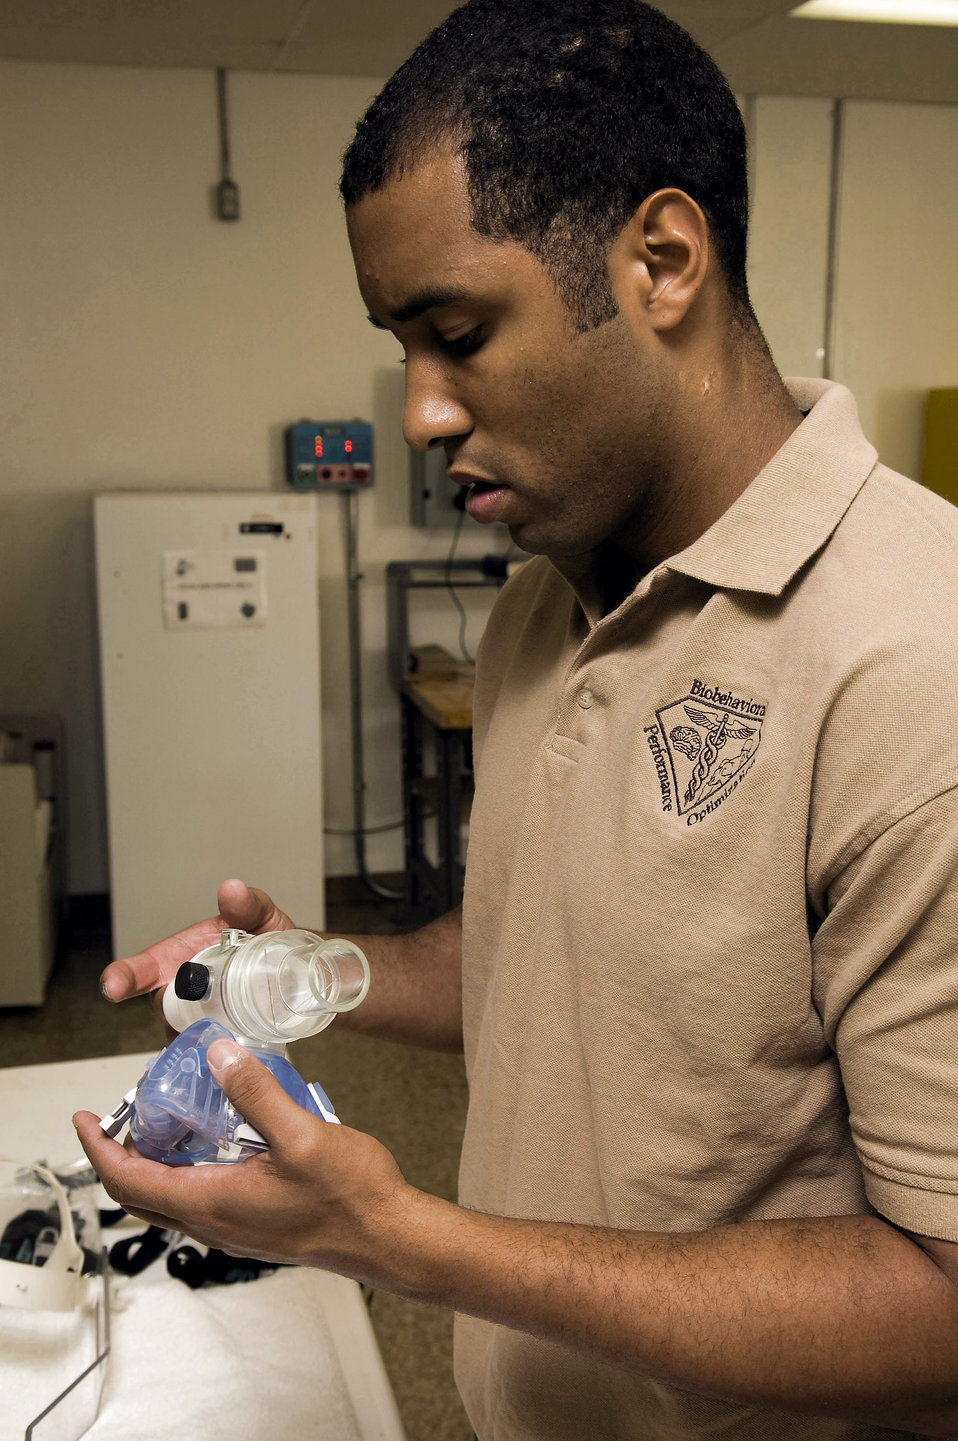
Studying human performance

Staff Sgt. Andre Scott assembles a breathing mask used to collect expired gases for comparison to atmospheric gases prior to the arrival of a citrulline malate test subject Aug. 18 at Brooks City-Base, Texas. Sergeant Scott is a aerospace physiology technician with the Air Force Research Laboratory.